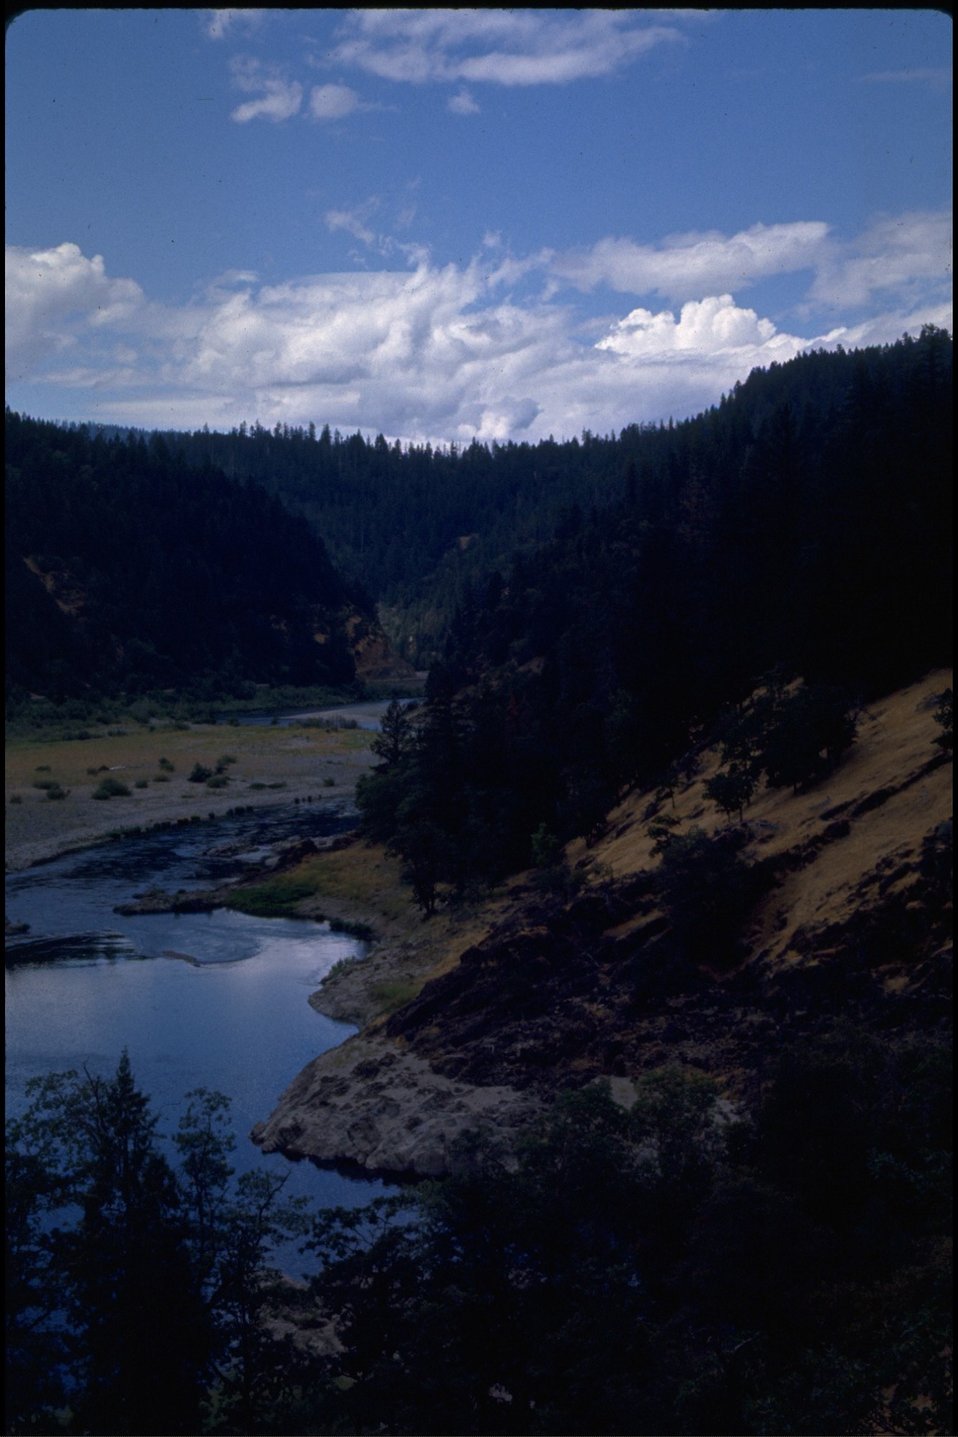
Rogue River - Just below Taylor Creek Canyon, Morrison's Lodge area, down river Hellgate Recreation Area.